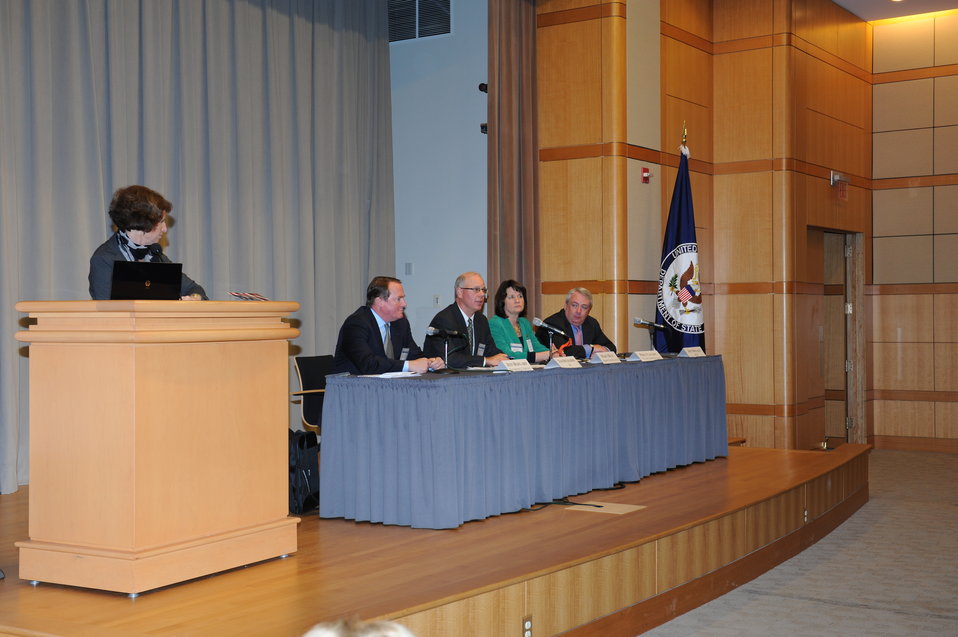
Special Representative Hariton Moderates a Panel Discussion

Special Representative for Commercial and Business Affairs Lorraine Hariton moderates a panel discussion with Jeff Hofgard, Vice President for International Operations and Policy from Boeing; Tim Richards, Managing Director for Energy Policy at General Electric, Mary Menz Vice President of Corporate Trade Compliance from Harris; and Philip Vaughn, Senior Director Government Relations from Fluor Corporation; on November 21, 2011.